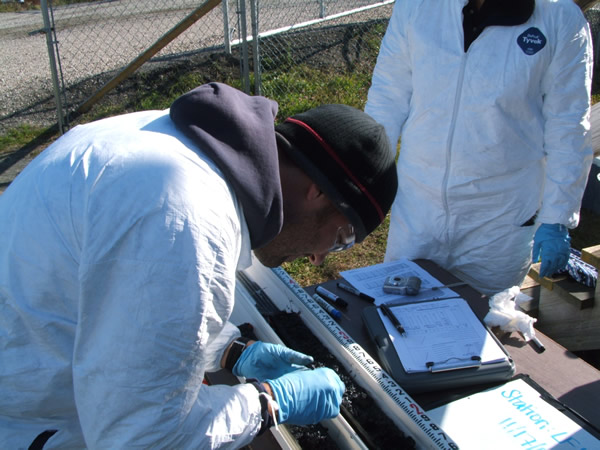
December 2009, Scientists process post dredging sediment cores

Project scientists process sediment cores after dredging, the sediment cores are geologically described and sampled for PCBs. The sample results help project staff plan for the following year.